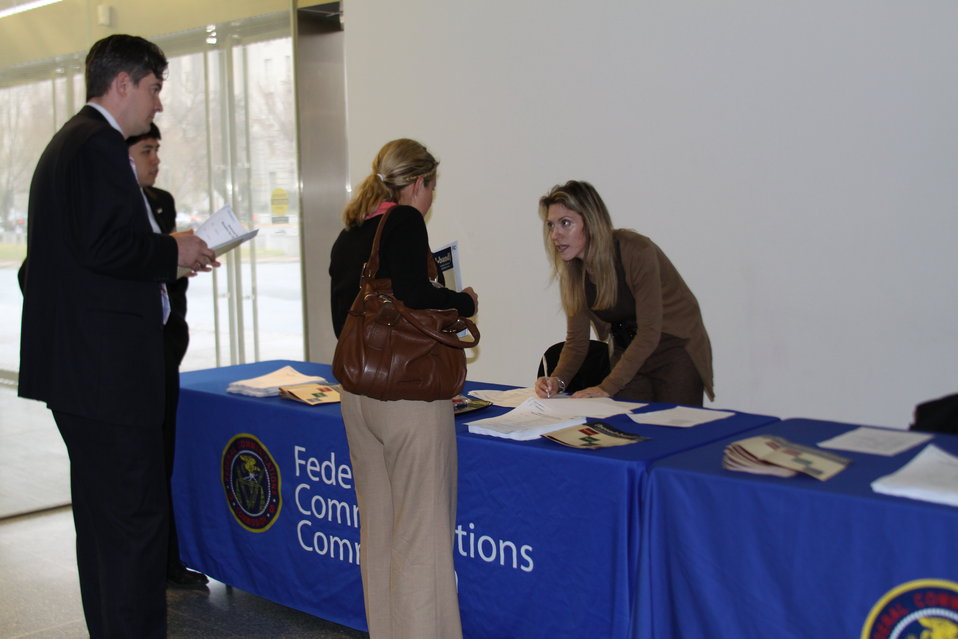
March 12, 2010- Smithsonian Broadband with Elmo